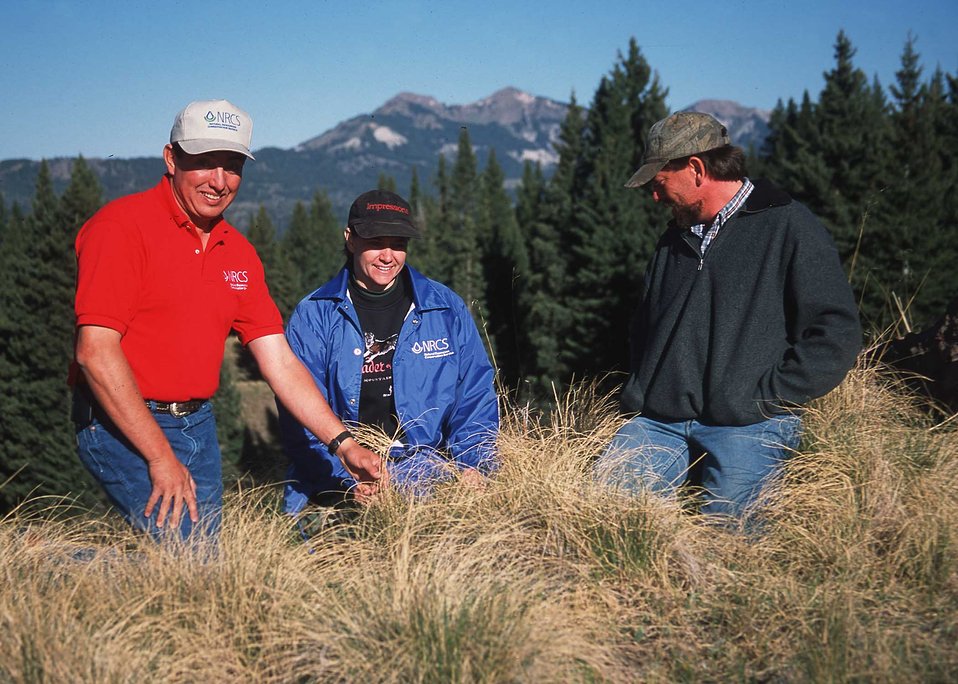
Northwest Field Team Leader Norm Vigil (red) and Soil Conservationist Jill Jensen (blue) provide grazing recommendations for a ranch that specializes in raising elk for hunting. Chama, New Mexico.